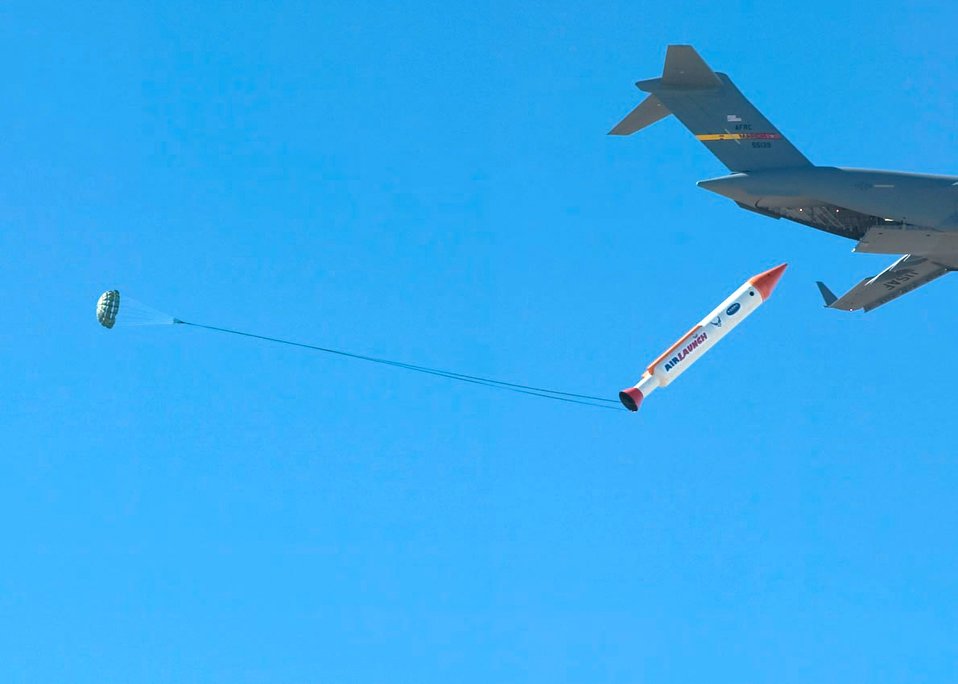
Edwards, DARPA explore new C-17 capability

OVER EDWARDS AIR FORCE BASE, Calif. -- A 50,000-pound mock-up booster rocket deploys rolls out the back of a C-17 Globemaster III. The test was the first in a series designed to explore a more flexible and affordable satellite launch capability.